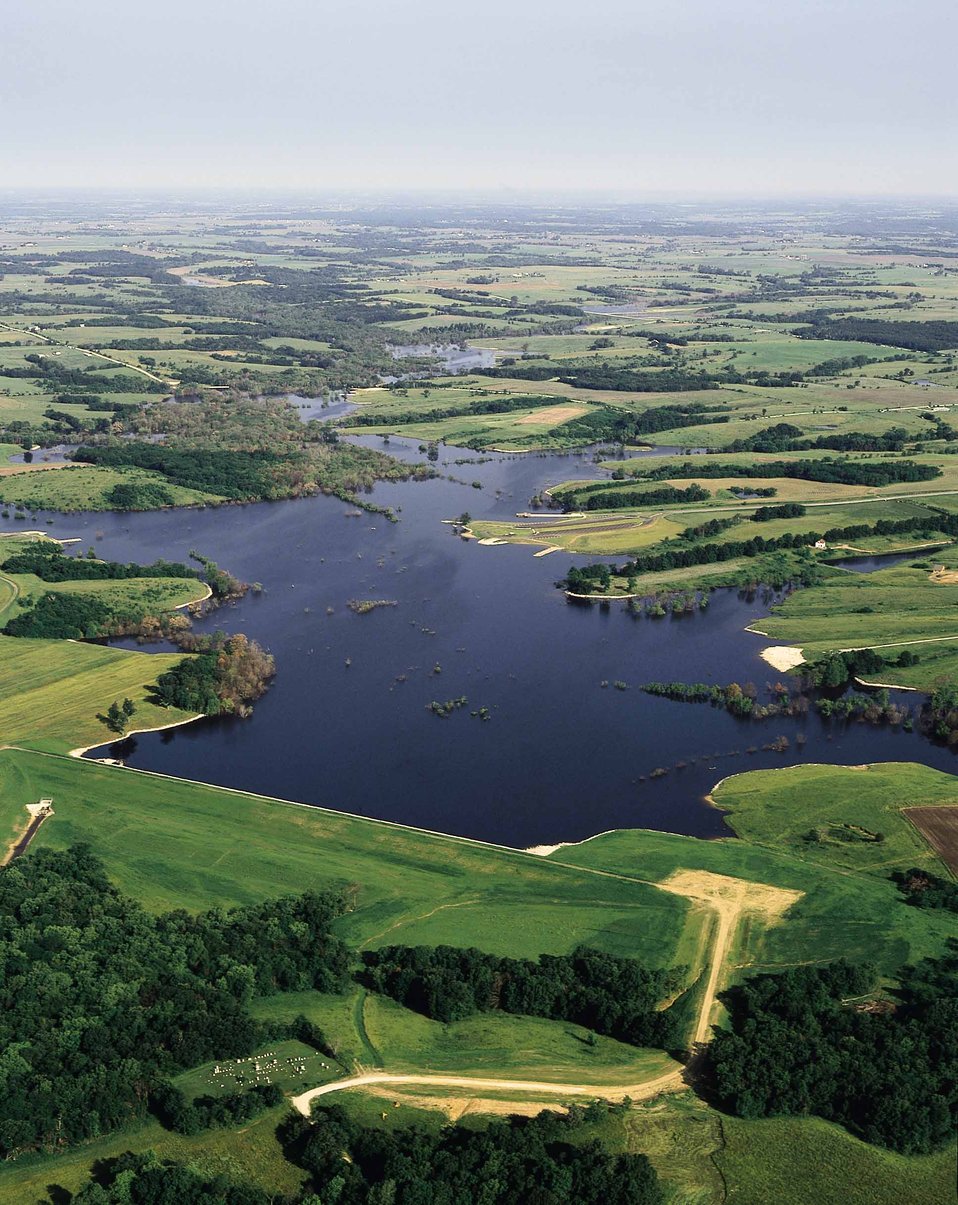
Lake Sugema, a lake formed by a dam built as part of the Indian Creek-Van Buren Watershed Project in Van Buren County. The dam provides recreation, water supply, and flood control, and boosts the local economy.